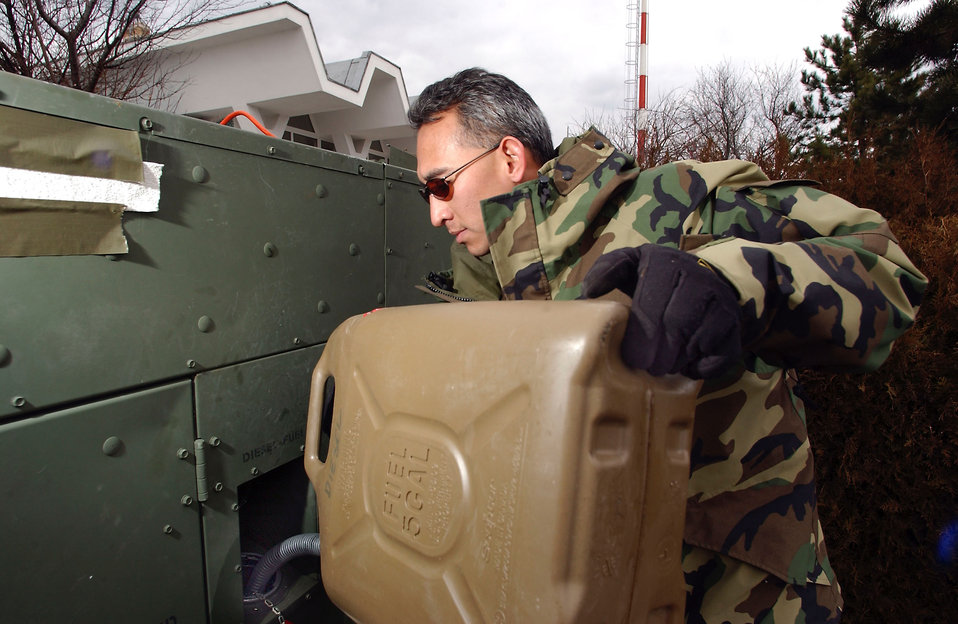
Spencer

CONSTANTA, Romania -- Tech. Sgt. Jay Spencer refuels a generator that supplies power for communications and computers to the 54-person 349th Tanker Airlift Control Element here. The TALCE supports the Operation Iraqi Freedom air bridge. Spencer is a communication and aerospace-ground-equipment specialist.